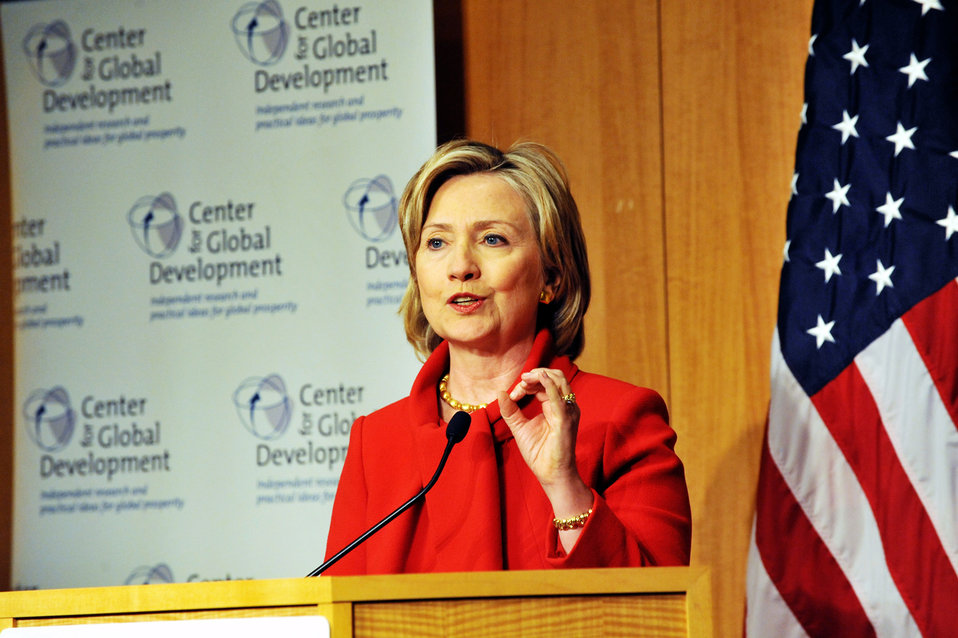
Secretary Clinton: Development in the 21st Century

U.S. Secretary of State Hillary Rodham Clinton provides remarks on 'Development in the 21st Century' at the Center for Global Development in Washington, DC January 6, 2010.